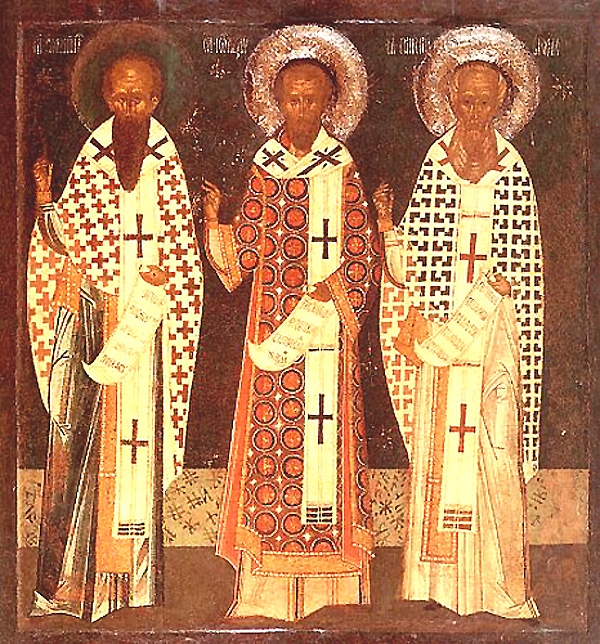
Icon for the Synaxis of the Three Holy Hierarchs